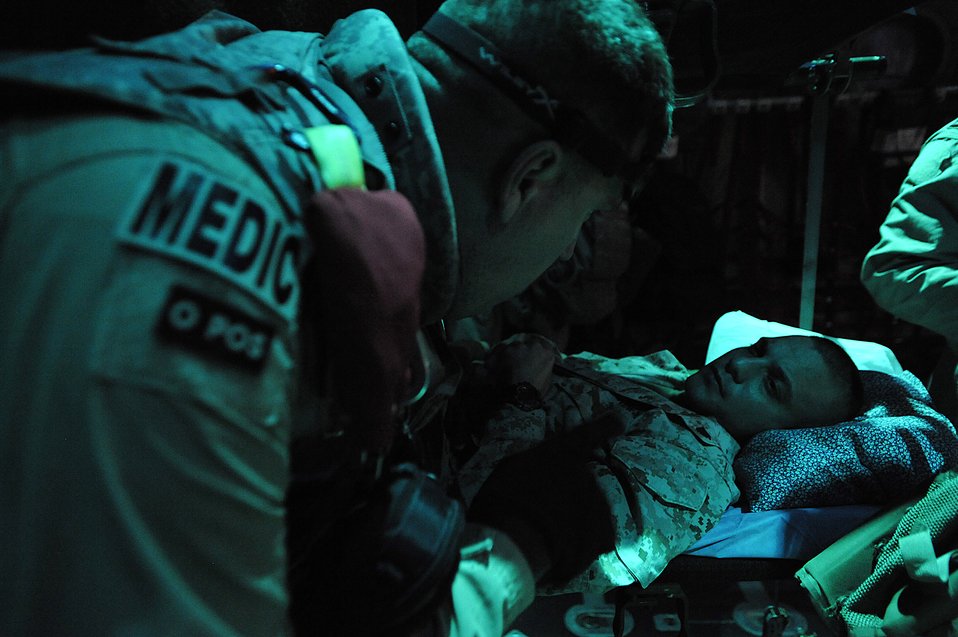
How's it going?

Master Sgt. Scott Wilkes checks on Marine Lance Cpl. Geroge Diaz during an aeromedical evacuation mission Nov. 7 over Iraq. Sergeant Wilkes is a charge medical technician with the 332nd Expeditionary Aeromedical Evacuation Flight.